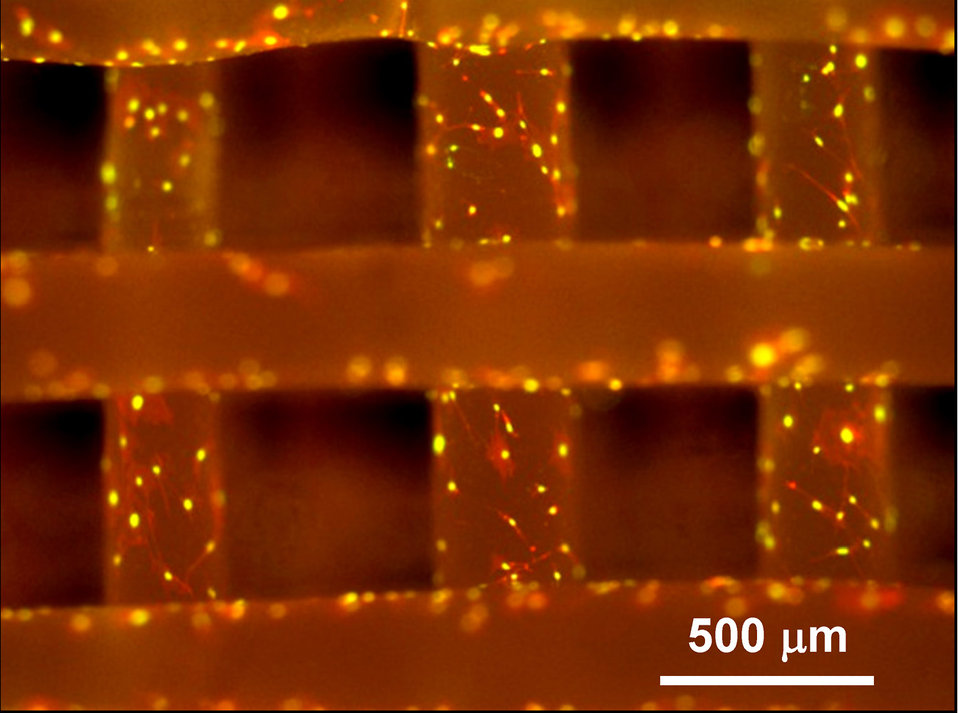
Fluorescense micrographs of a test culture of bone cells after one day shows the cells proliferating on the struts of new NIST reference scaffold for tissue engineering.